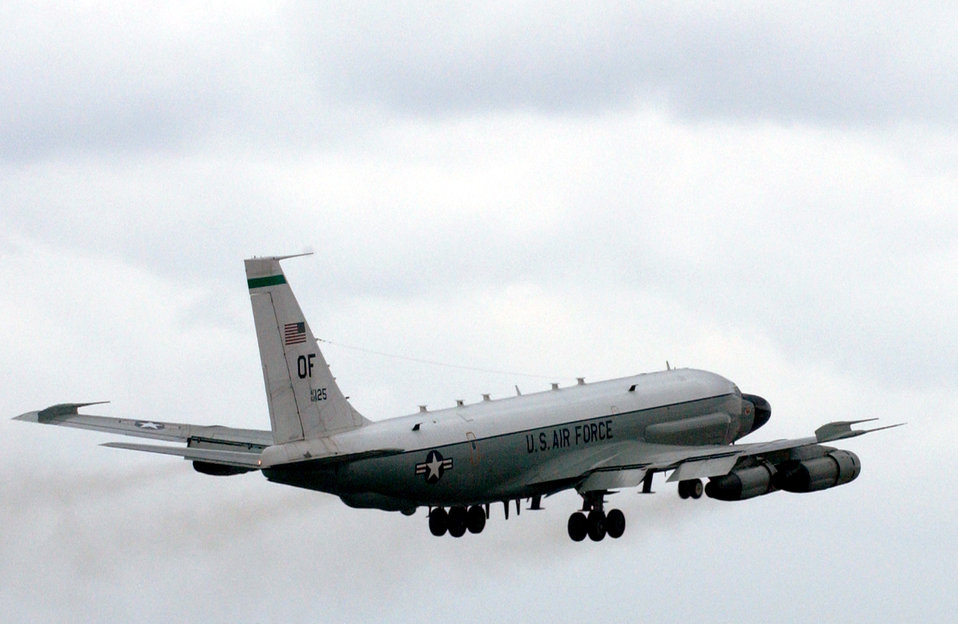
RJ lifts off

OPERATION IRAQI FREEDOM -- An RC-135 reconnaissance aircraft